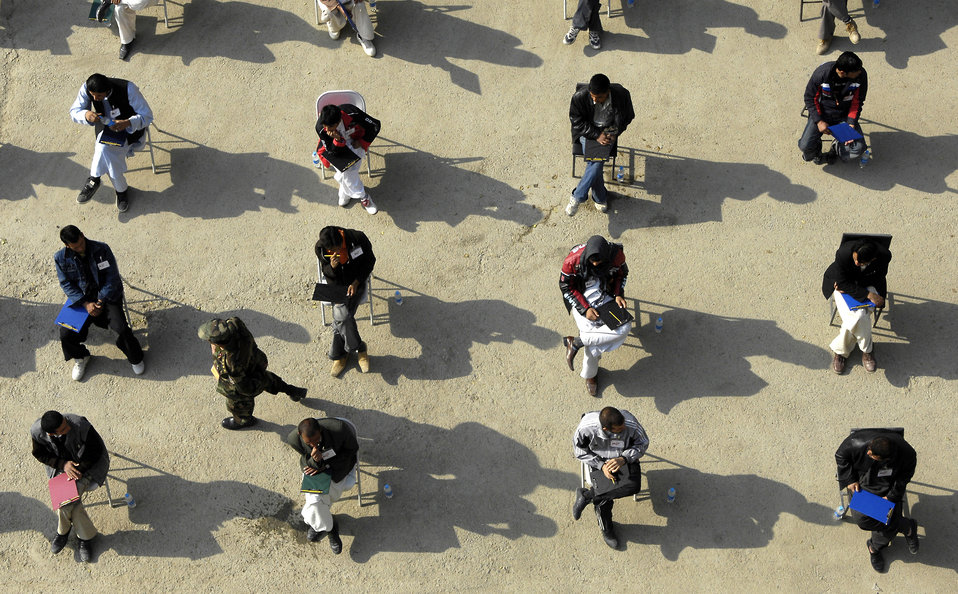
'I'm ready'

With clipboards in hand, prospective cadets wait to take the entrance exam for the Afghan National Army Academy in Kabul Oct 25. More than 1800 came here to test, all hoping to be one of the approximately 300 chosen for the new freshman class.